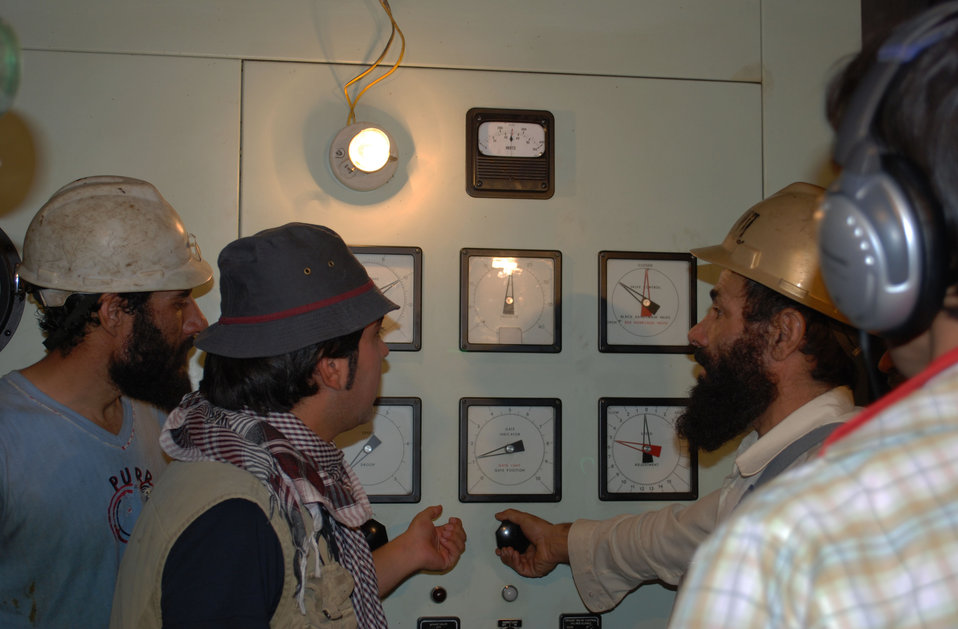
'On the Road' in Kandahar